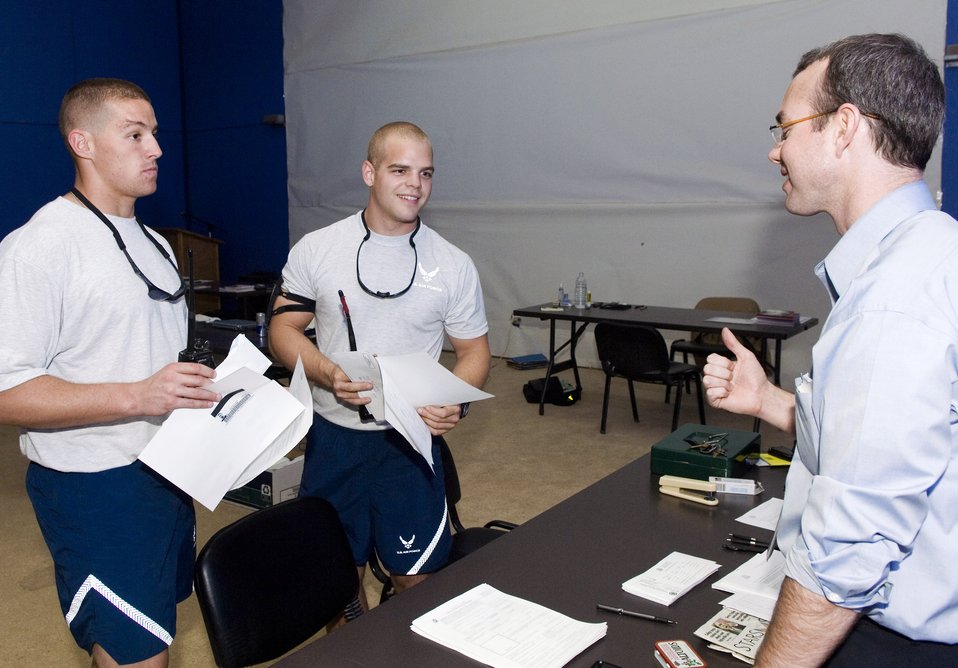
Embassy visits Balad, helps Airmen, Soldiers get passports

Lee Calkins explains what is needed to obtain a passport to Airmen 1st Class Richard Jones (left) and Ryan Larson Nov. 10 at Balad Air Base, Iraq. Mr. Calkins was on-hand from the U.S. Department of State Foreign Service office to process passports for all military members who had the correct documentation. Airmen Jones and Larson are deployed from Aviano Air Base, Italy, and are both 332nd Expeditionary Civil Engineer Squadron firemen.